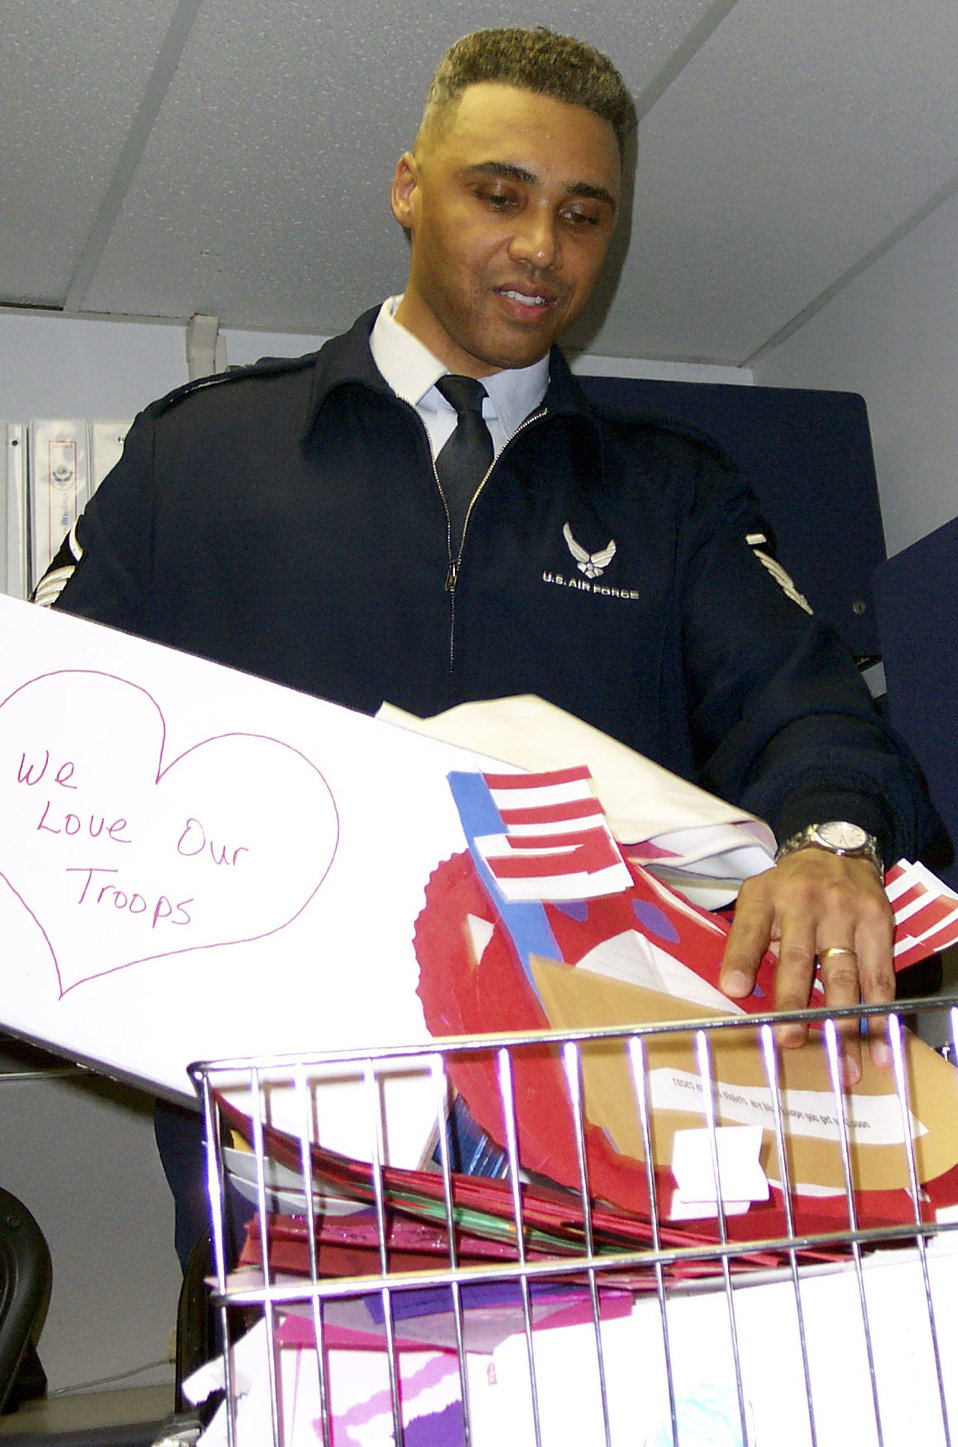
Have a heart

WASHINGTON -- Master Sgt. Robert Wilkins collects some of the more than 3,000 Valentine's Day cards the Air Force Pentagon Enlisted Council collected for wounded troops.